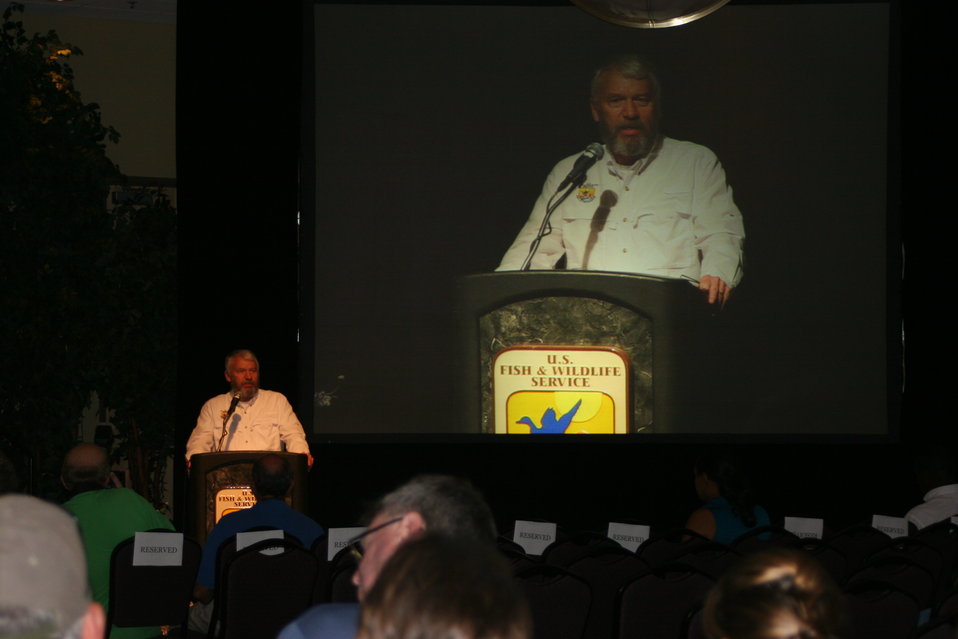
Day 2 Opening Remarks

Photo Credit: Suzanne Fellows / USFWS
The U.S. Fish & Wildlife Service sponsored the 2012 Federal Duck Stamp Art Contest September 28 and 29 in Ogden, Utah, at Weber State University. A panel of five judges was responsible for choosing the art work used to design the 2013-2014 Migratory Bird Hunting and Conservation Stamp.